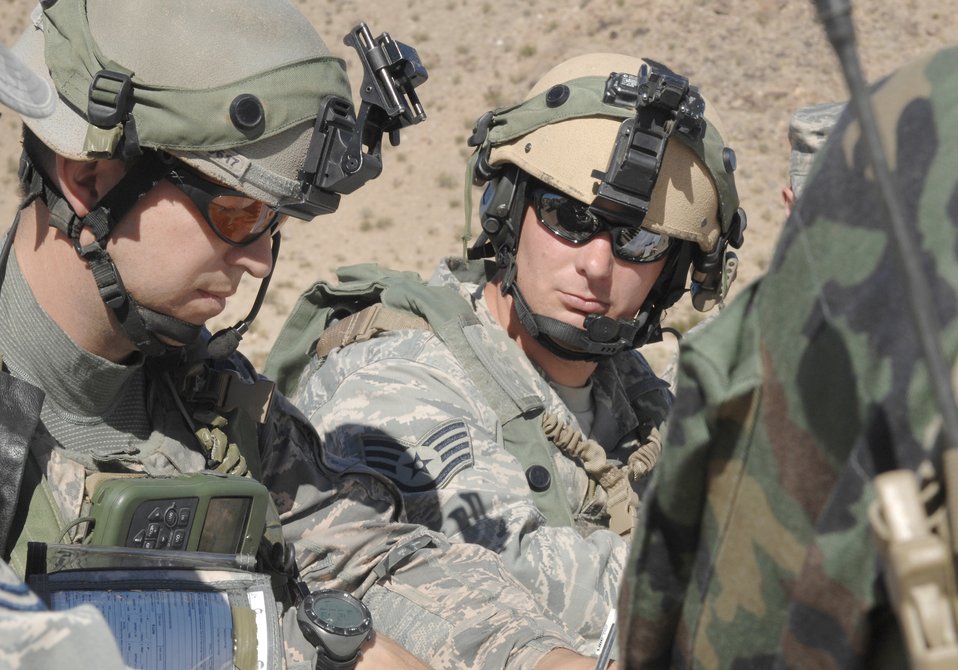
Combat training scenario

Master Sgt. Steven Blouin and Staff Sgt. Nathaniel Vanecko pre-brief before a training scenario Nov. 1, 2010, at the training range on Fort Irwin, Calif. Both sergeants are with the 12th Combat Training Squadron Tactical Air Control Party located at Fort Irwin and attached to the 57th Wing at Nellis Air Force Base, Nev.